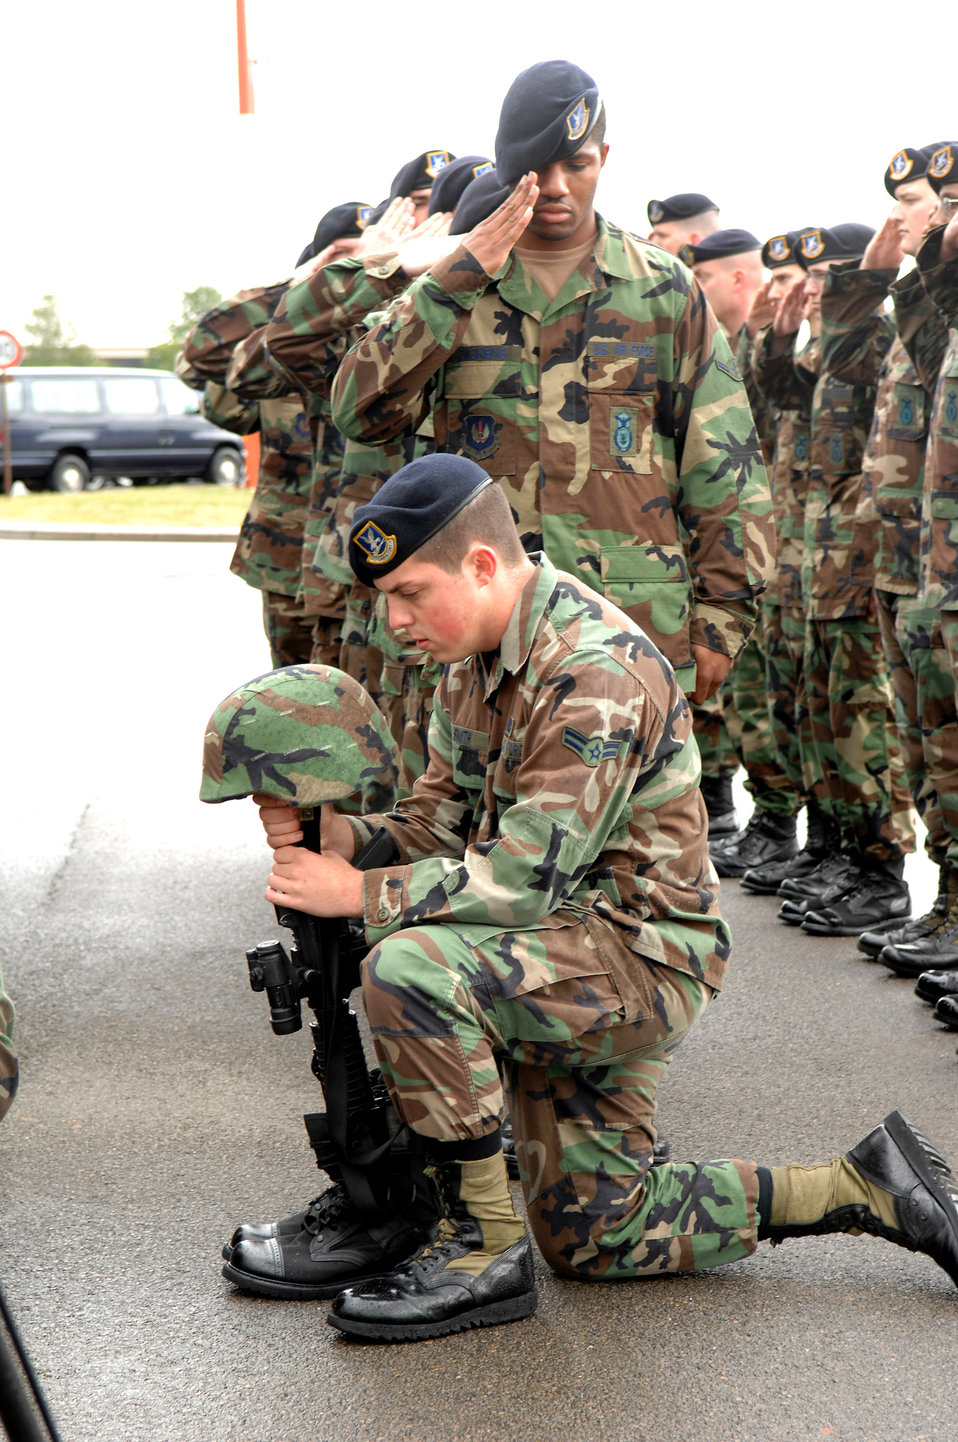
Ramstein security forces honor fallen comrades

Airman 1st Class Nathan Smith kneels in respect for a fellow Airman while Airman Antonio Dickens renders a salute during the Last Guard Mount Ceremony May 16 at Ramstein Air Base, Germany. The ceremony, which recognizes fallen security forces members, was held in conjunction with National Police Week. Airmen Smith and Dickens are assigned to the 435th Security Forces Squadron.